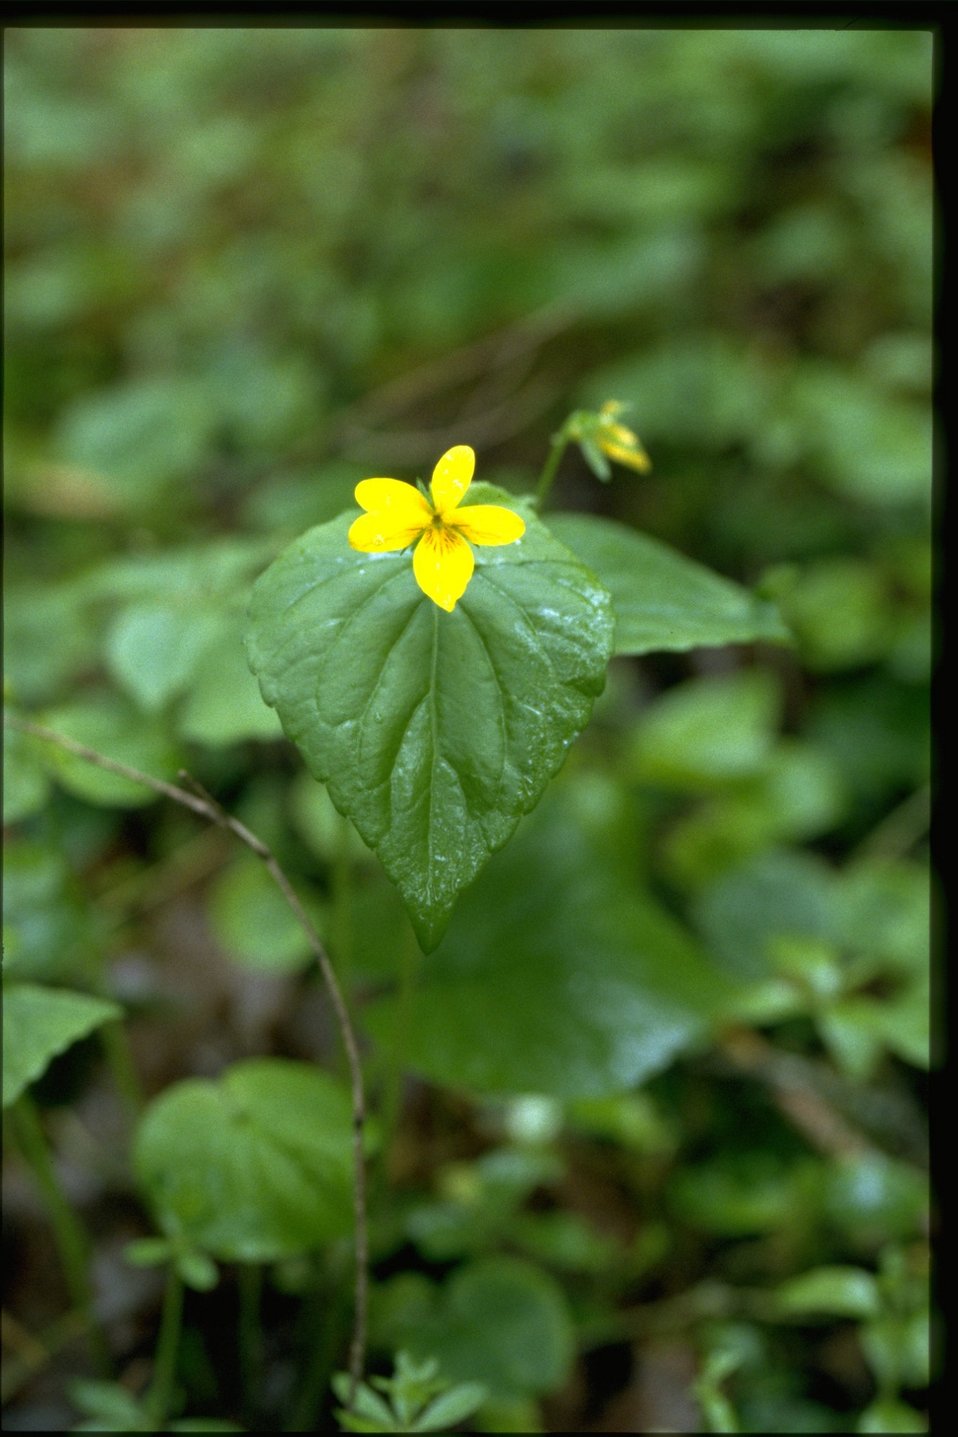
Medium shot of stream violet (Viola glabella).